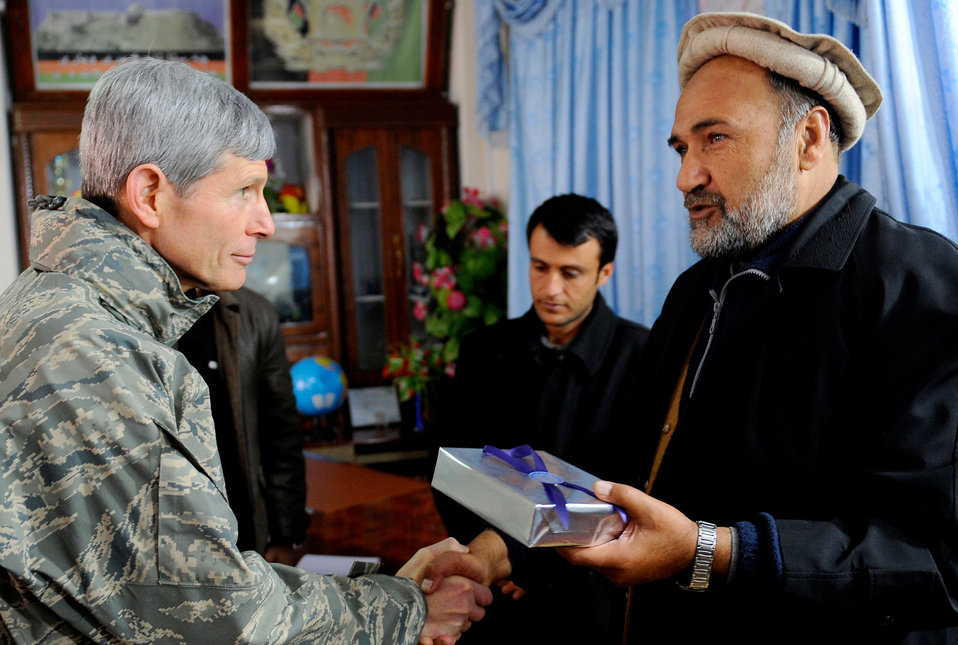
Air Force Chief of Staff visits PRT Zabul

Air Force Chief of Staff Gen. Norton Schwartz presents a gift to Ashraf Naseri, the Zabul Provincial governor, during a visit Jan. 20, 2011, to Forward Operating Base Smart, Afghanistan. The visit was part of the general's trip to the U.S. Central Command area of responsibility.